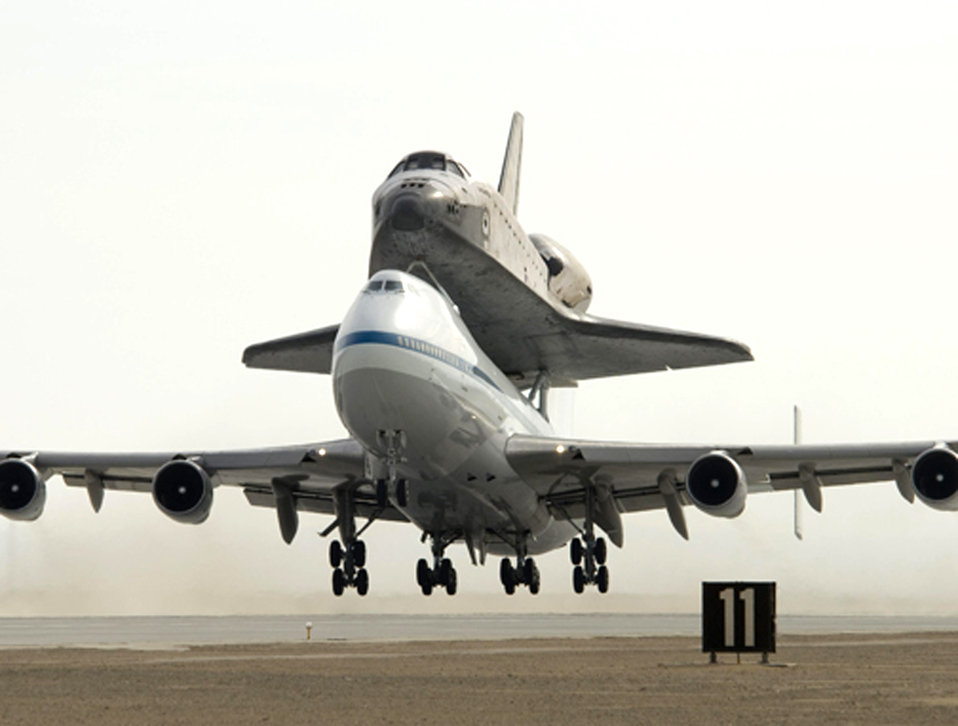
Piggyback

Space Shuttle Atlantis is carried on a NASA-modified Boeing 747 off Runway 22 at Edwards Air Force Base in California on the first leg of the ferry flight back to the Kennedy Space Center in Florida June 1.